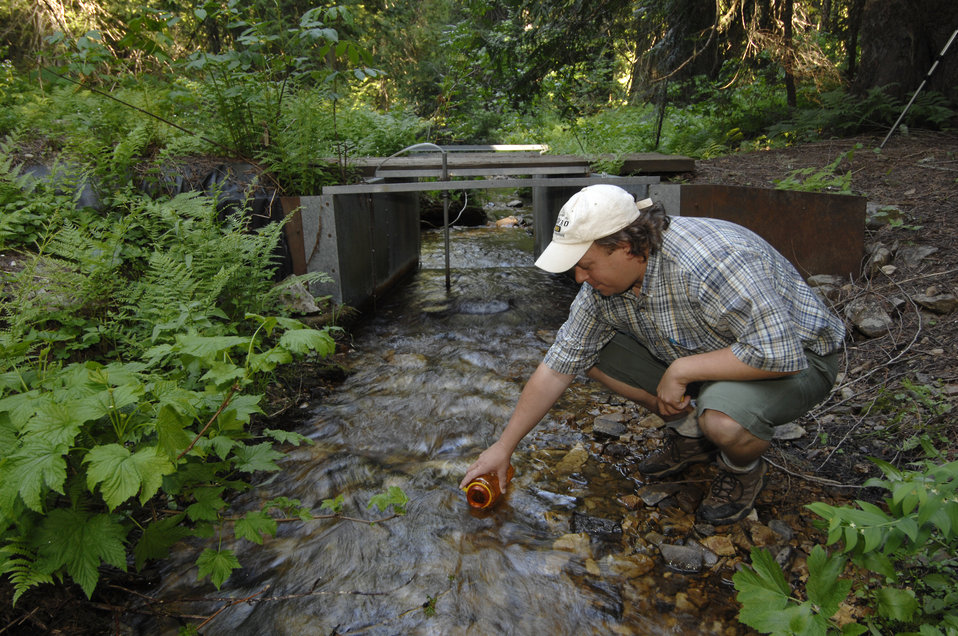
University of Idaho Associate Professor for Hydrology in the College of Natural Resources Dr. Timothy Link takes a sample of water from a stream near Moscow, Idaho on July 8, 2008. The U.S. Department of Agriculture's (USDA) Cooperative State Research, Education, and Extension Service (CSREES) partners with the University of Idaho to conduct research to improve watershed habitat and water supplies.